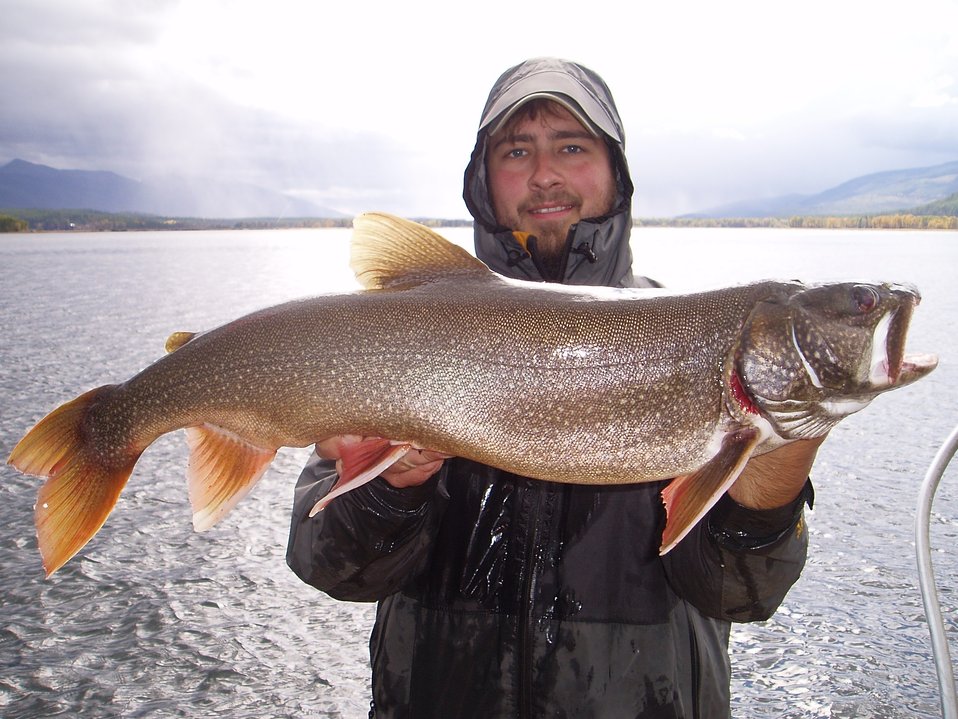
Adult Lake Trout

Invasive adult lake trout captured and removed from the spawning area on Swan Lake in Montana.